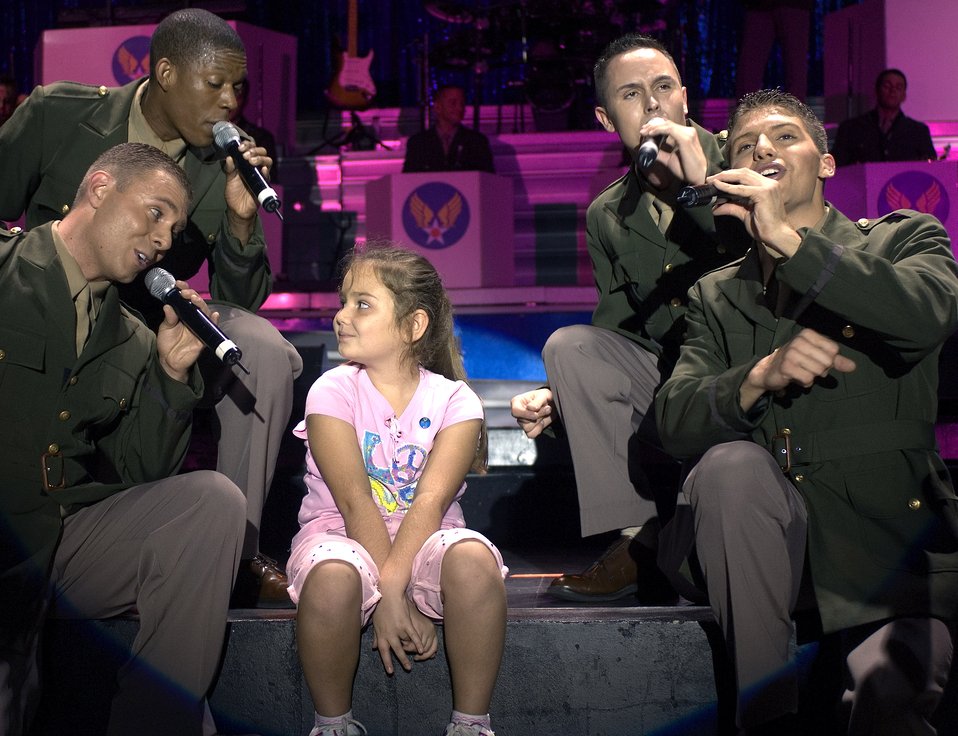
Air Force Week Atlanta

Tops in Blue Airmen serenade seven-year-old Hayley Godfrey of Acworth, Ga., during an Air Force musical tribute Oct. 9 in Mableton, Ga. Hayley is the daughter of Chief Master Sgt. Dallas Godfrey stationed at Dobbins Air Reserve Base, Ga. Tops In Blue was in Georgia as part of Air Force Week Atlanta honoring 60 years of Air Force history.